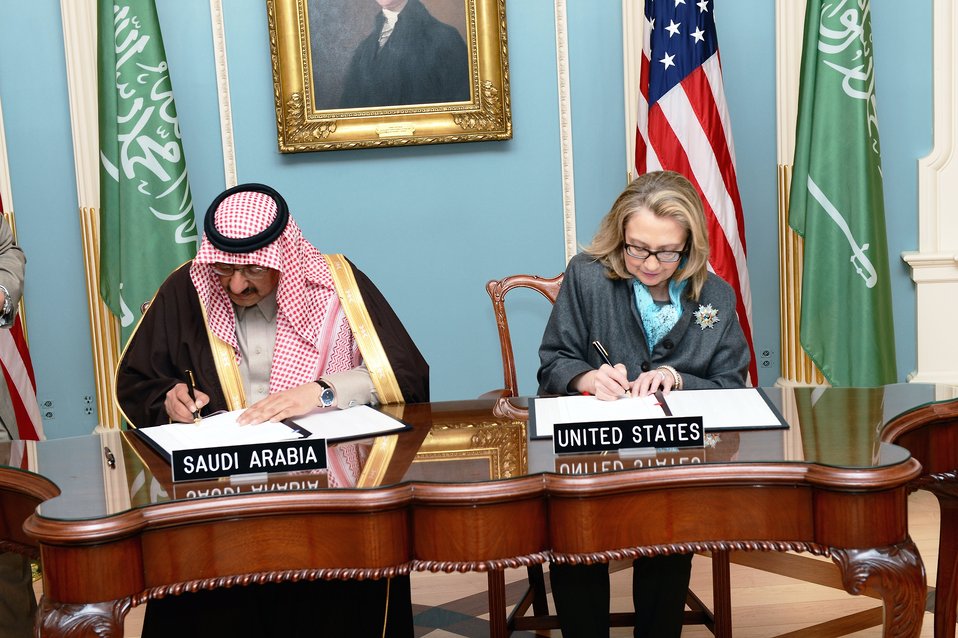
Secretary Clinton and Prince Mohammed bin Naif bin Abdulaziz Participate in a Signing Ceremony

U.S. Secretary of State Hillary Rodham Clinton participates in a signing ceremony with Interior Minister of Saudi Arabia, Prince Mohammed bin Naif bin Abdulaziz, at the U.S. Department of State in Washington, D.C., January 16, 2013.